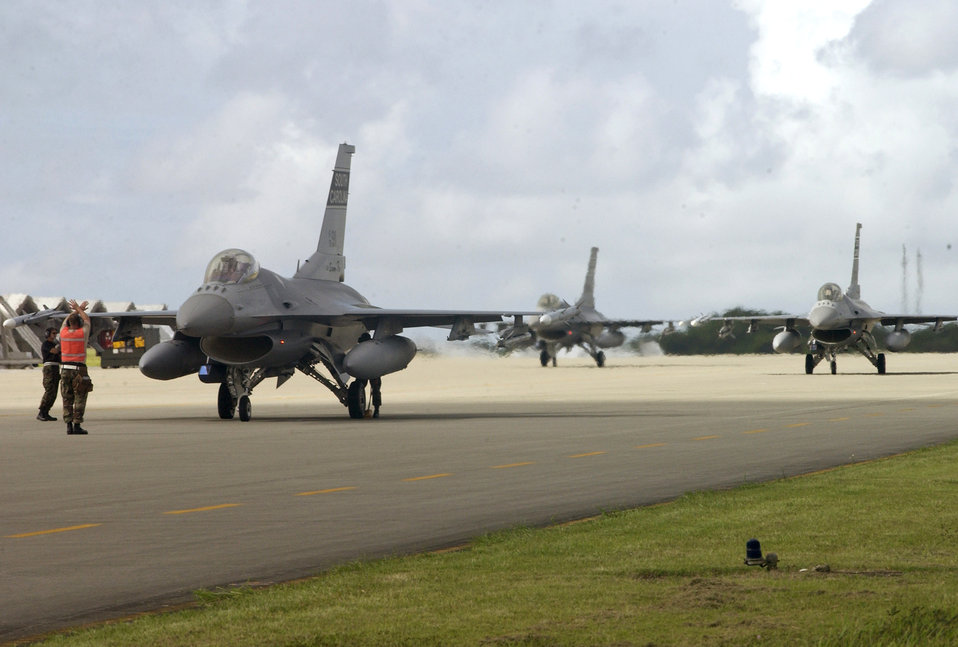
South Carolina Air Guard trains at Kadena

F-16 Fighting Falcons assigned to the South Carolina Air National Guard's 157th Fighter Squadron taxi in at Kadena Air Base, Japan, after a mission Sept. 11. Twelve aircraft and more than 300 Airmen from the South Carolina Air National Guard's 157th Fighter Squadron are deployed to Kadena to conduct theater orientation training.